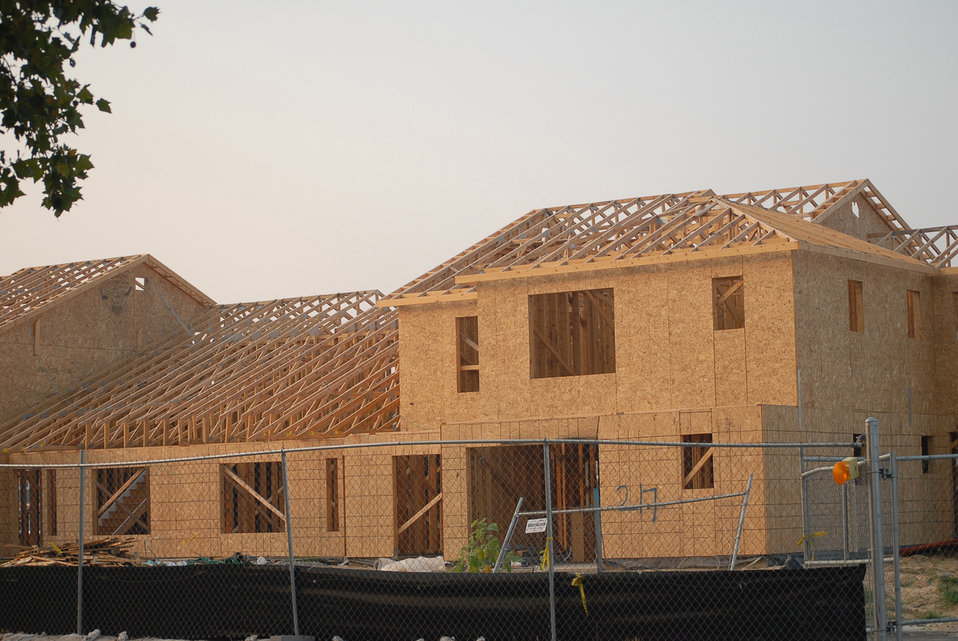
Dover housing to claim award

A junior-enlisted multiplex is under construction Jan. 16 at Dover Air Force Base, Del. At project completion in 2009, the 212 homes constructed in 2004 and 2005 will be joined by 768 new homes, making Dover AFB the first base in Air Mobility Command to have all-new housing.